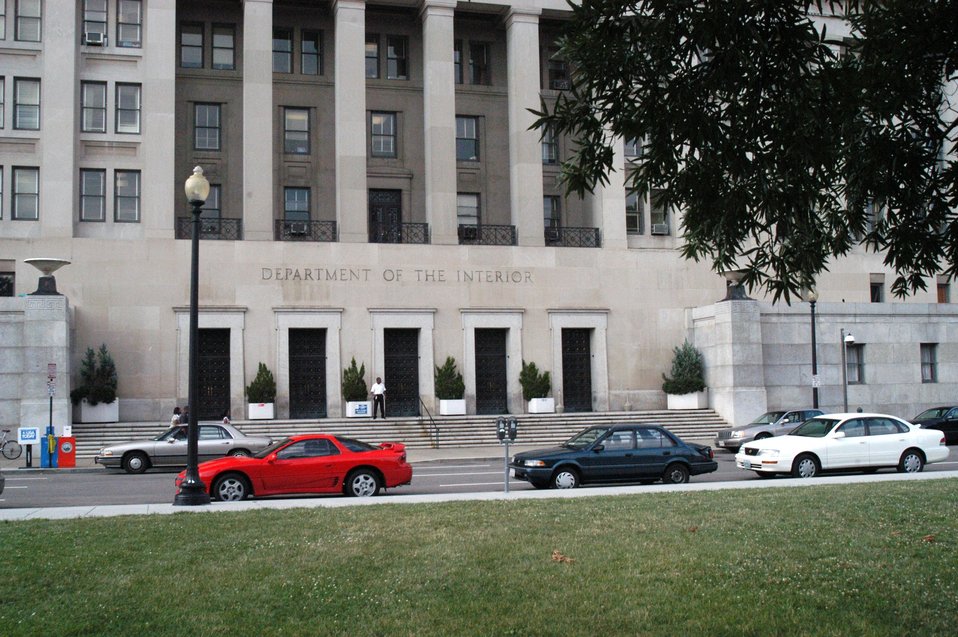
Department of the Interior building in Washington DC on 1849 C Street N.W. Photo by Tom Iraci, July 2004.